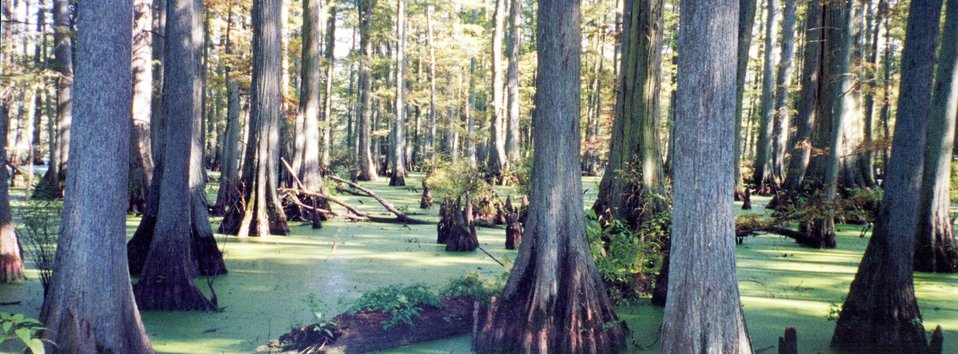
A beautiful stand of cypress trees